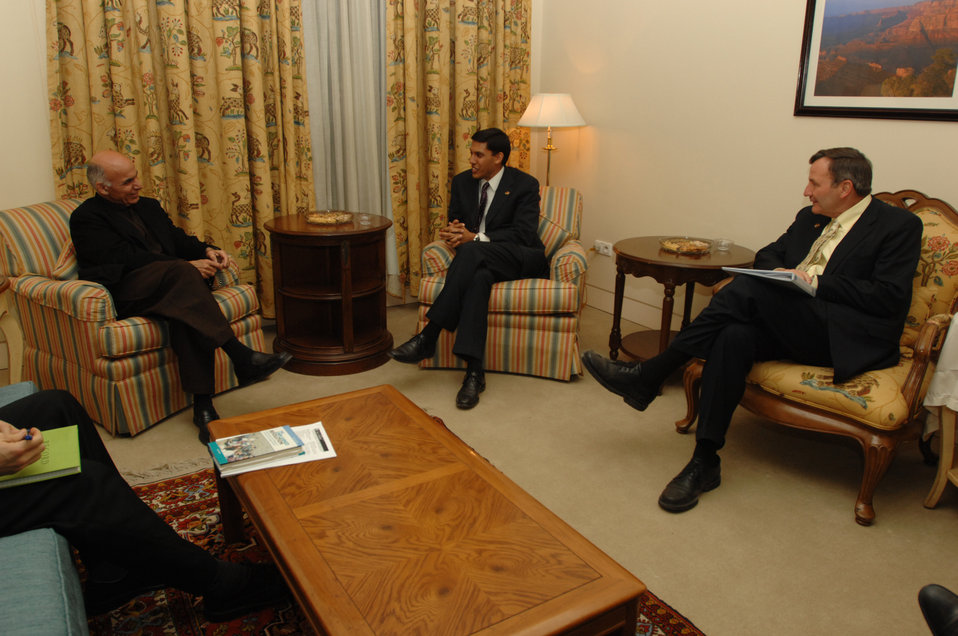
Dr. Shah meets with Dr. Ghani

Dr. Rajiv Shah, Administrator of the United States Agency for International Development (USAID), meets with Dr. Ashraf Ghani Ahmadzai and U.S. Ambassador Karl W. Eikenberry at the U.S. Embassy in Kabul, Afghanistan on February 8, 2011. (S.K. Vemmer/Department of State)